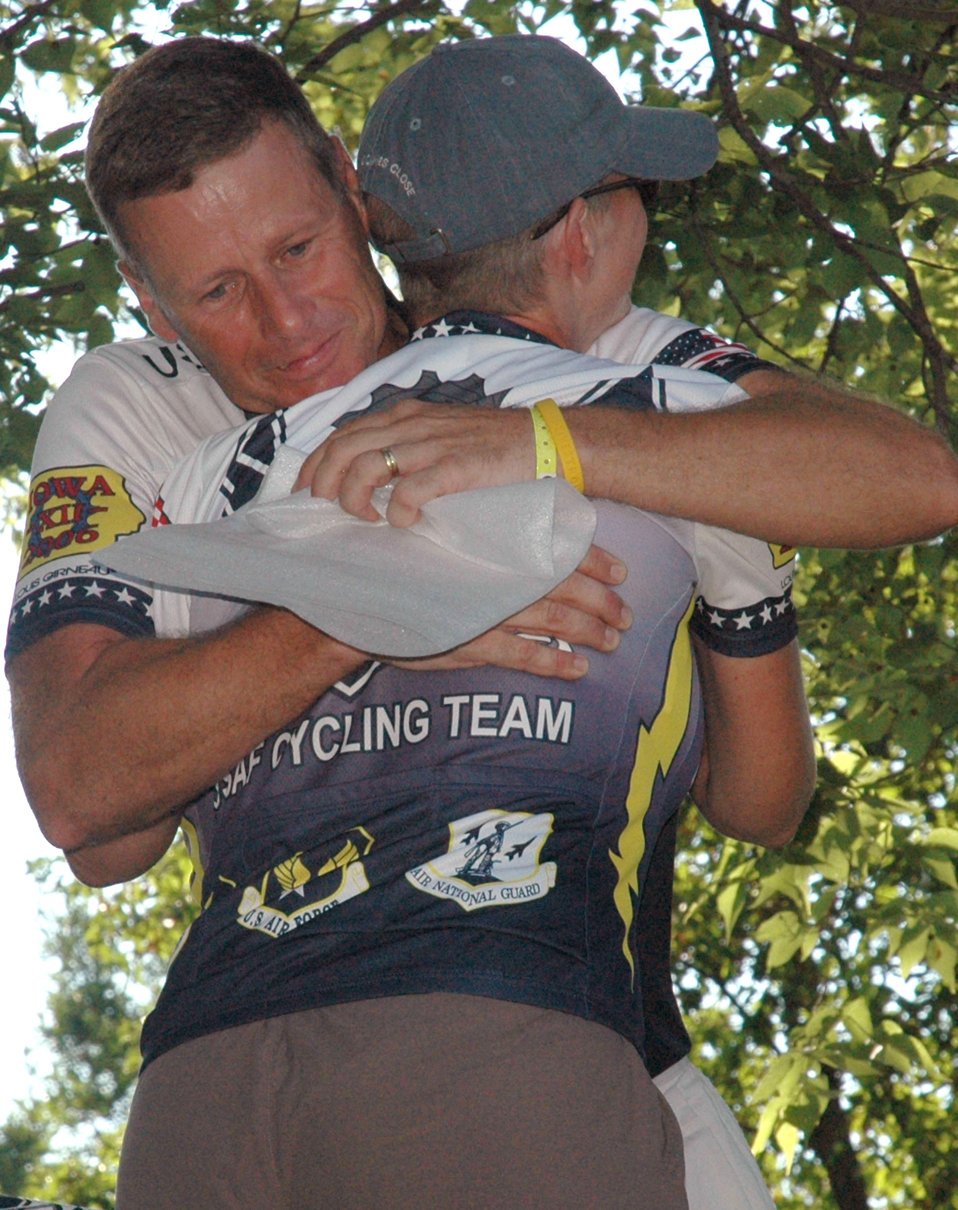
Cancer doesn't stop Air Force cyclists from crossing Iowa

Col. John Clarke hugs Pamela Vineyard after giving her a plaque and photo of her with Lance Armstrong. The two cyclists met Mr. Armstrong at a reception in Newton, Iowa, during their ride with the Register's Annual Great Bike Ride Across Iowa, or RAGBRAI, July 27. Colonel Clarke is stationed at Randolph Air Force Base, Texas, and Ms. Vineyard is from Hill AFB, Utah.